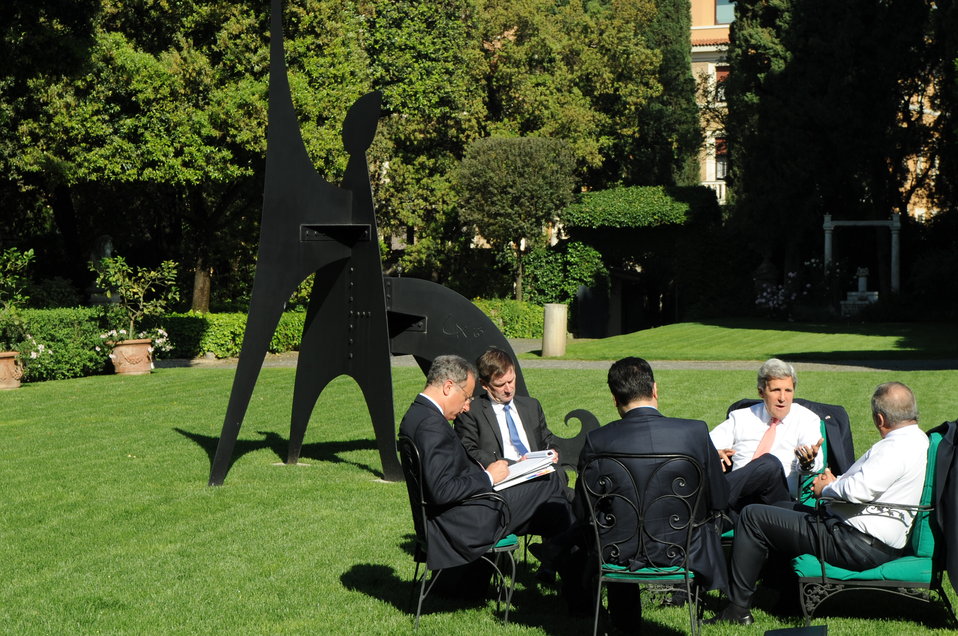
Secretary Kerry Meets With Jordanian Foreign Minister Judeh

With a Calder sculpture as a backdrop, U.S. Secretary of State John Kerry meets with Jordanian Foreign Minister Nasser Judeh at Villa Taverna, the U.S. Ambassador's residence in Rome, Italy, on May 9, 2013.